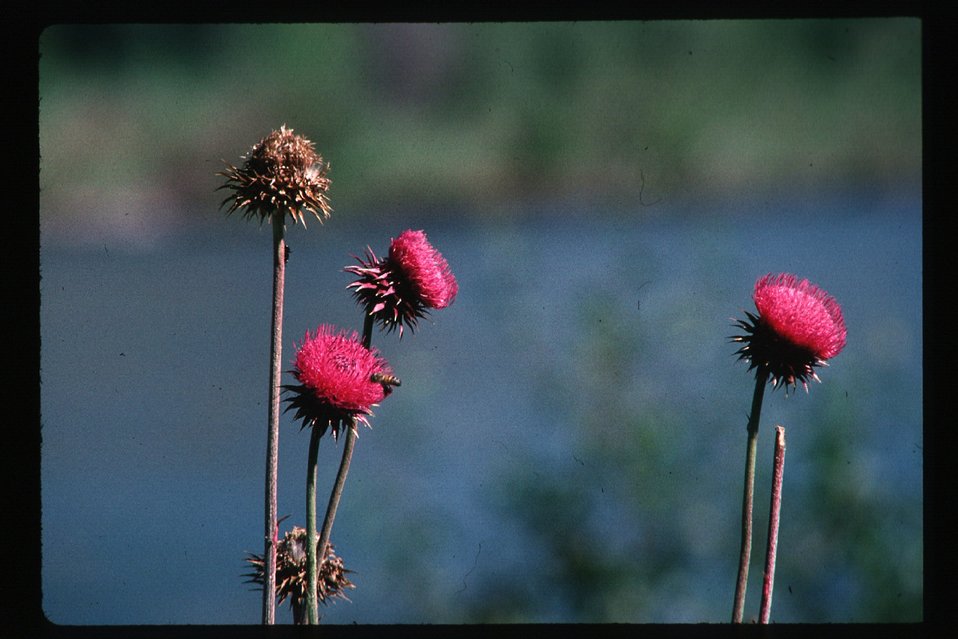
Wildflowers South Fork of Snake River Idaho Falls Field Office USRD Upper Snake River District